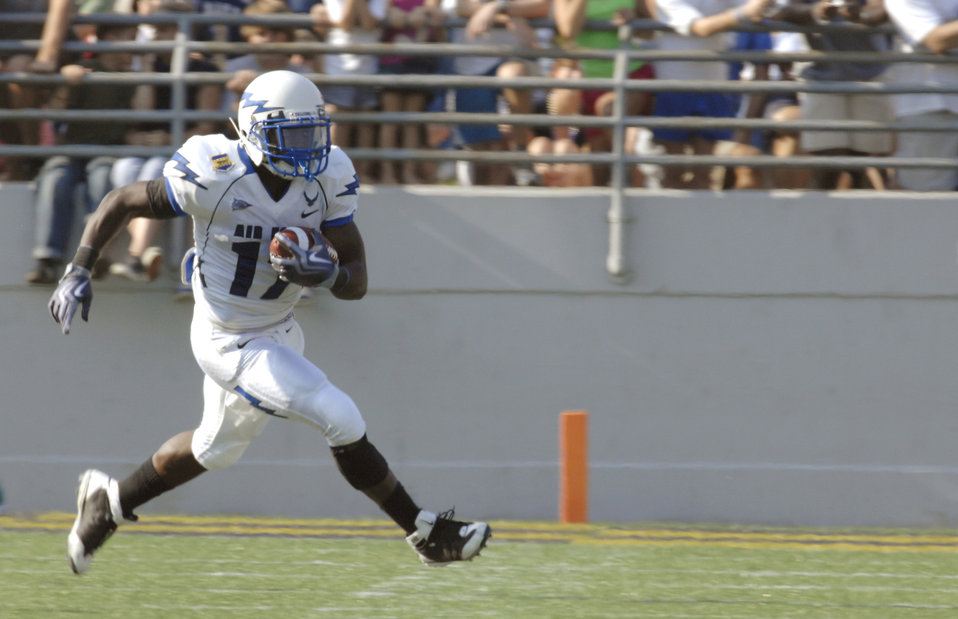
Football: Falcons fall to Midshipmen in overtime

U.S. Air Force Academy running back Asher Clark runs the ball against the U.S. Naval Academy defense Oct. 3, 2009, at Navy-Marine Corps Memorial Stadium in Annapolis, Md. The Midshipmen won the game 16-13, with a field goal in overtime.